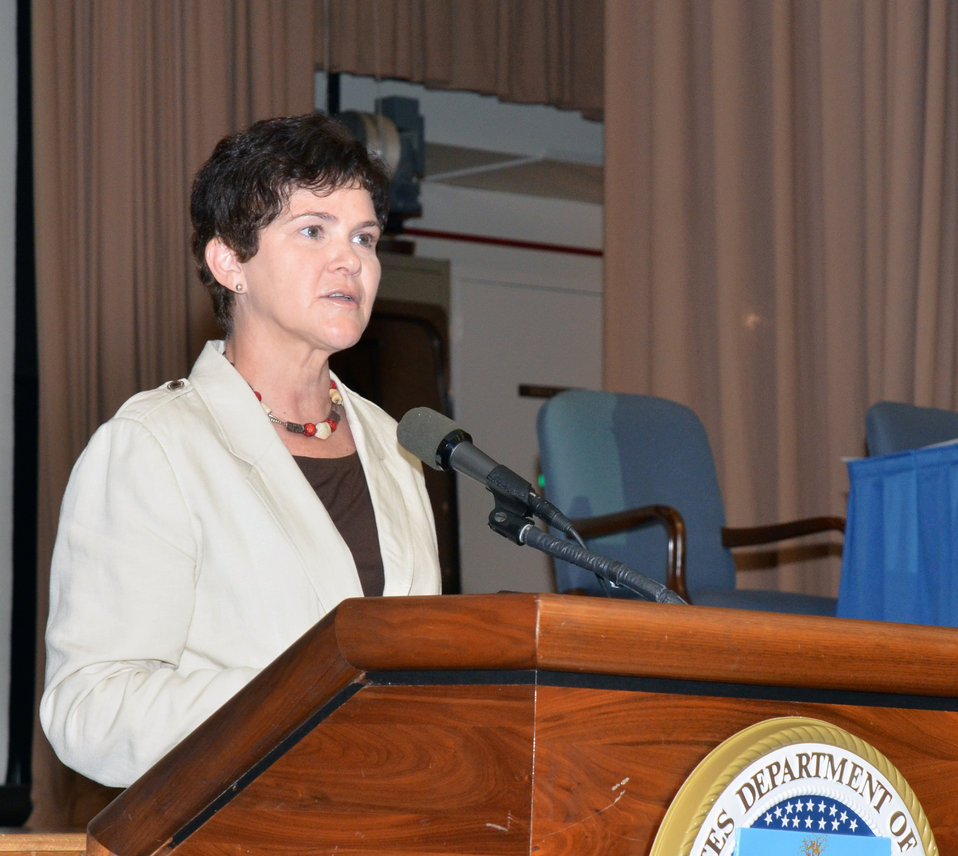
Agriculture Deputy Secretary Krysta Harden makes remarks at the U.S. Office of Government Ethics training Preventing Conflict of Interest in the Executive Branch at the Jefferson Auditorium at the U.S. Department of Agriculture (USDA) in Washington, D.C. on Wednesday, Aug. 21, 2013.